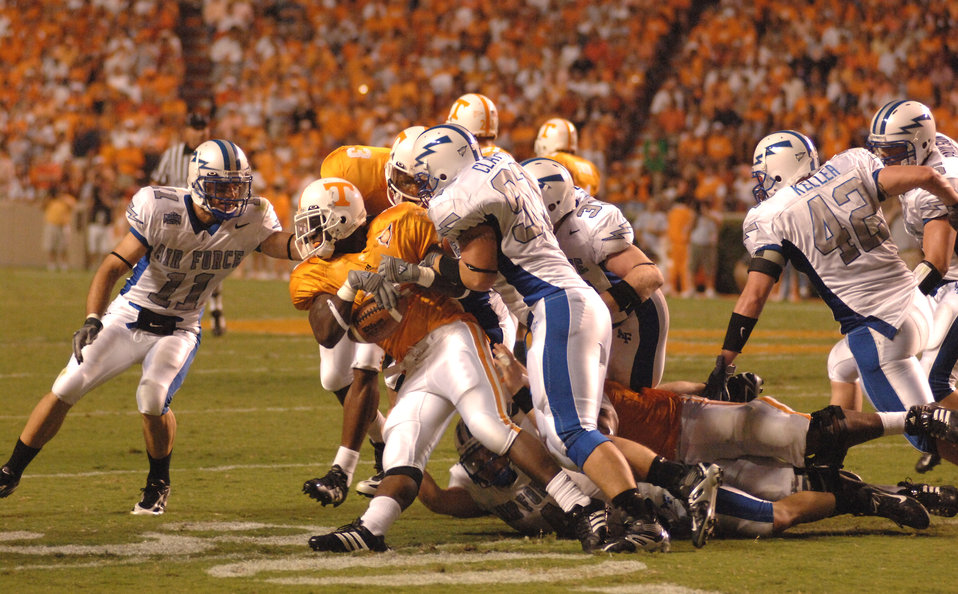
Falcons nearly upset #11 Tennessee in close season opener

Air Force Academy Falcons free safety Bobby Giannini (#11) prepares to finish off Tennessee tailback Montario Hardesty, while Falcons defensive end Josh Clayton (#97) loosens Hardesty's grip on the football. The freshman tailback ground out 63 of Tennessee's 79 yards on the ground and added one touchdown to the Volunteers' 31-30 win over Air Force Sept. 9.